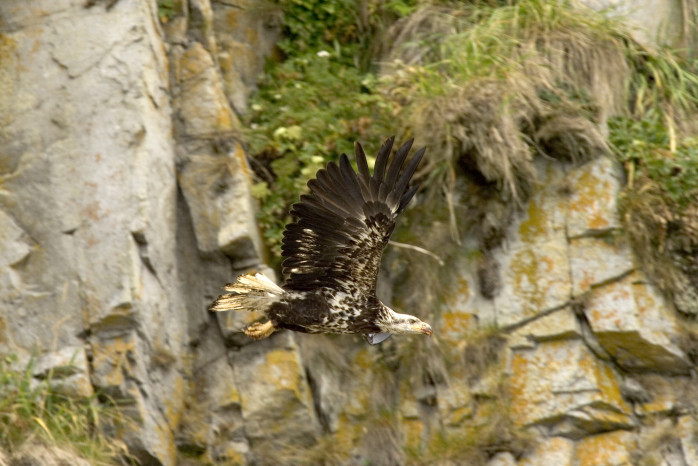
bald eagle

Juvenile bald eagle soaring, Shumagin Islands, Alaska Maritime National Wildlife Refuge